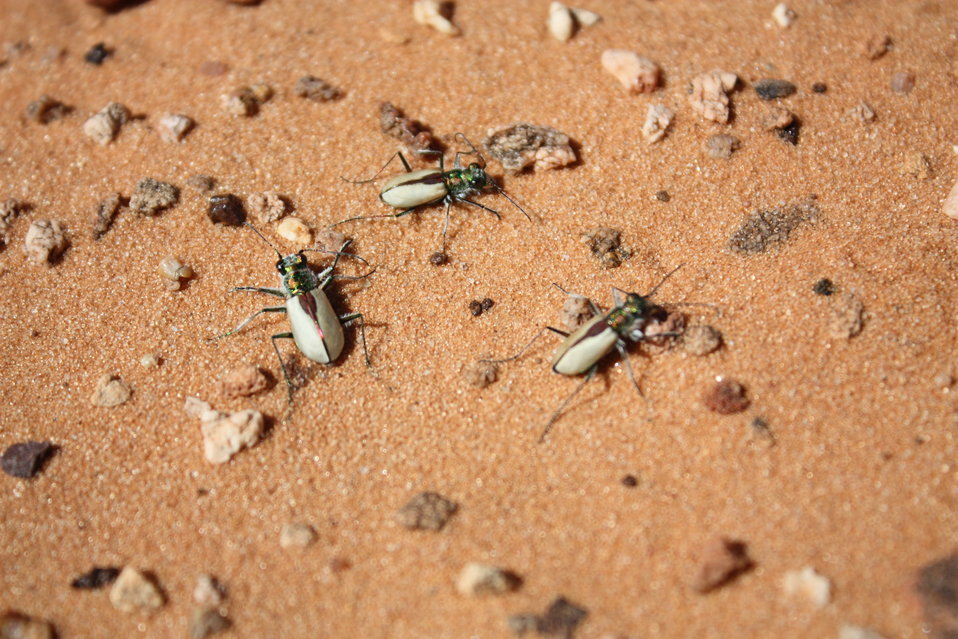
Tiger Beetle Trio

The Coral Pink Sand Dune Tiger Beetle occurs within Kane County, Utah.